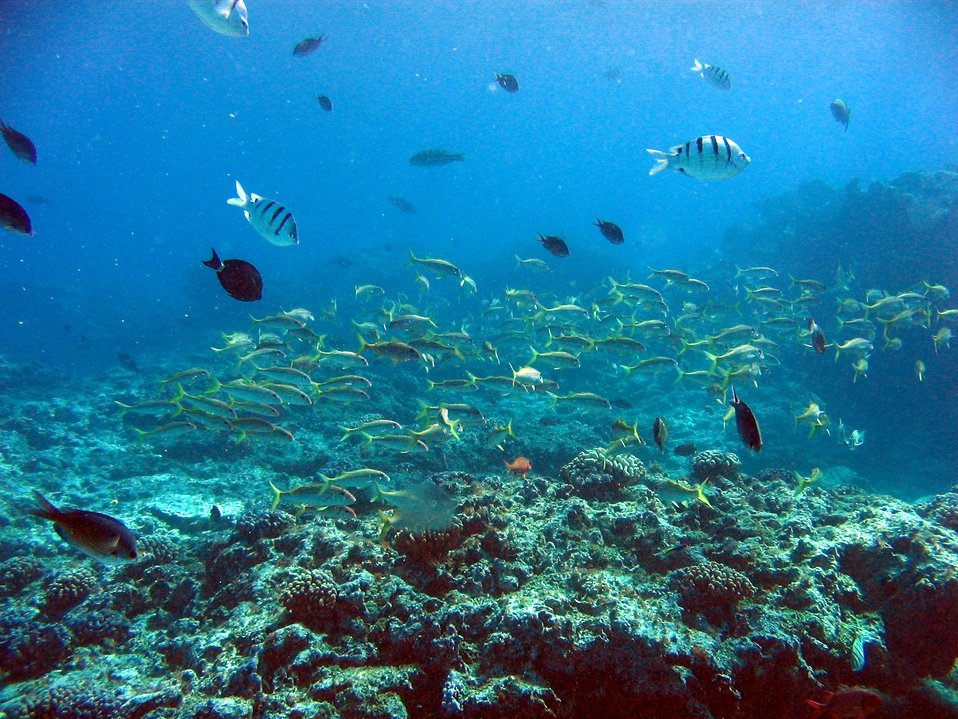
Goatfish are yellow fish while sergeant major fish are white with black stripes.